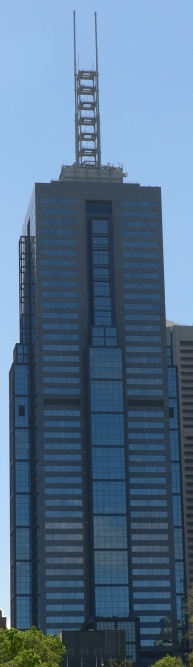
101 Collins Street. Melbourne, Australia